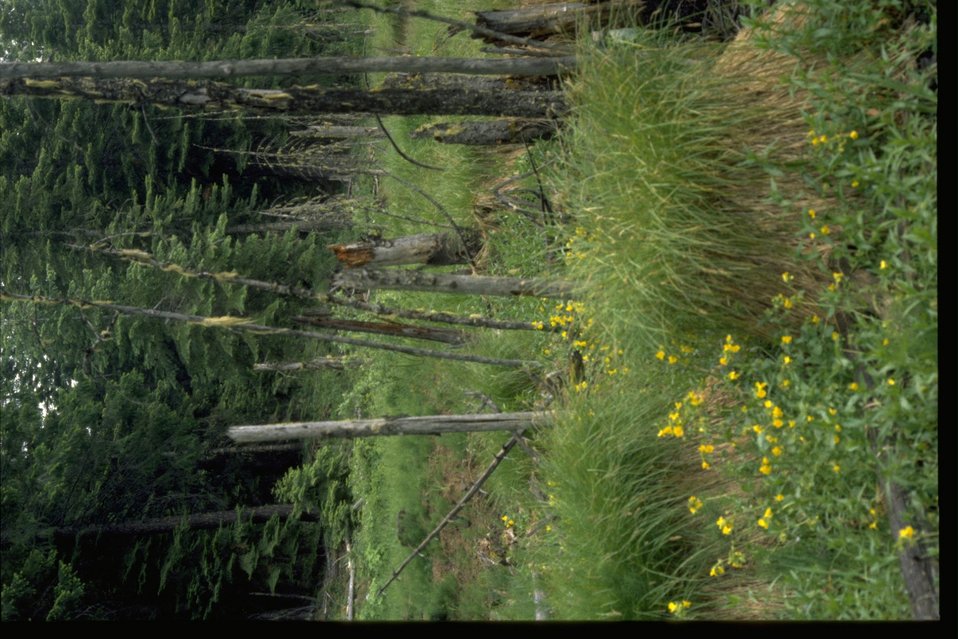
Jenny Creek LSR Parsnip Lake's beaver pond.